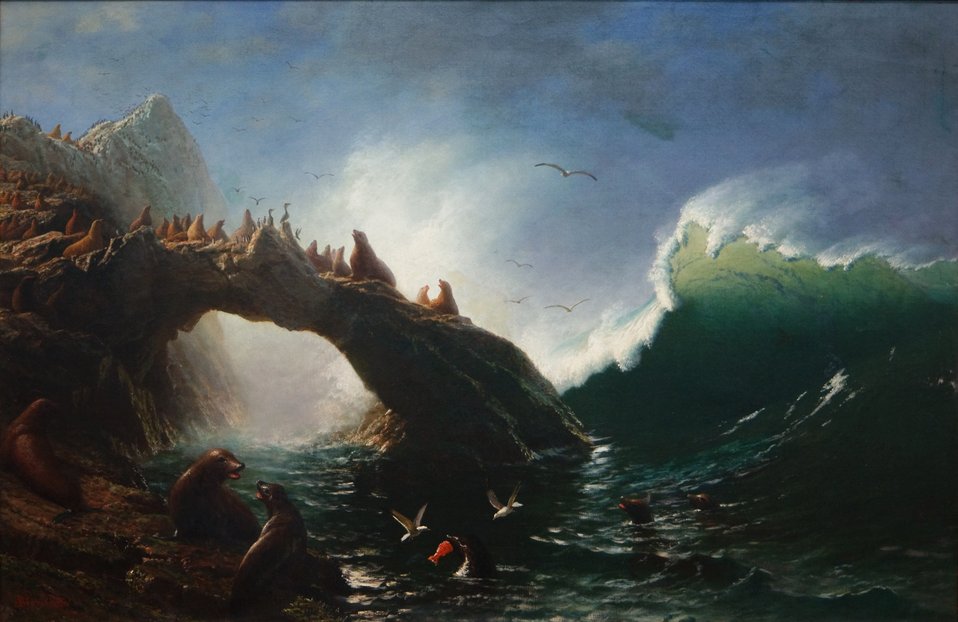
WLA cma Farallon Island 1887